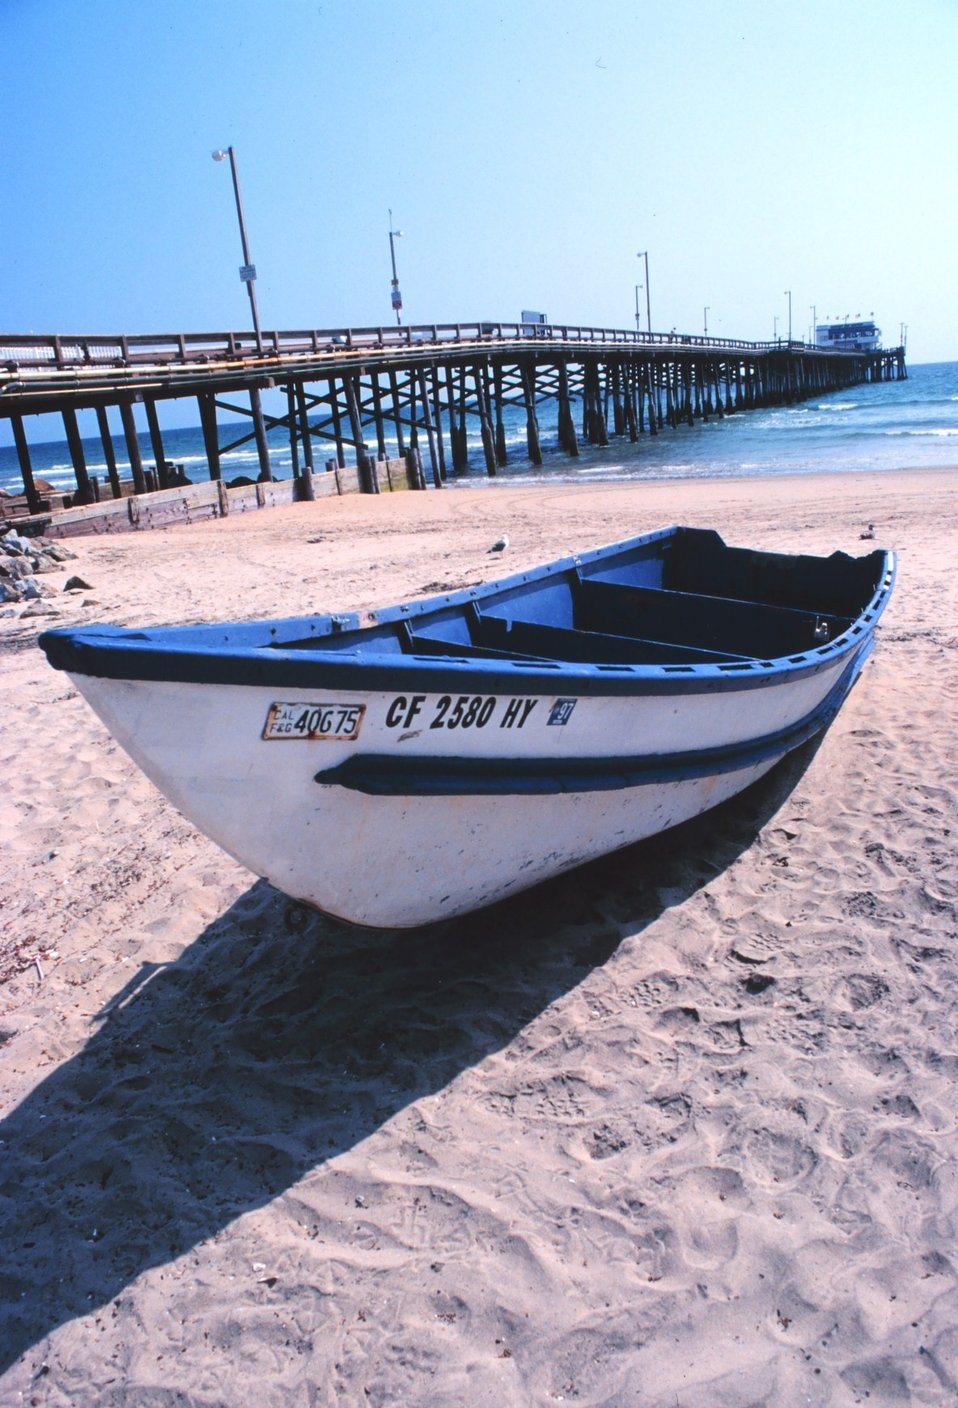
A part of the Newport Beach dory fishing fleet on Newport Beach